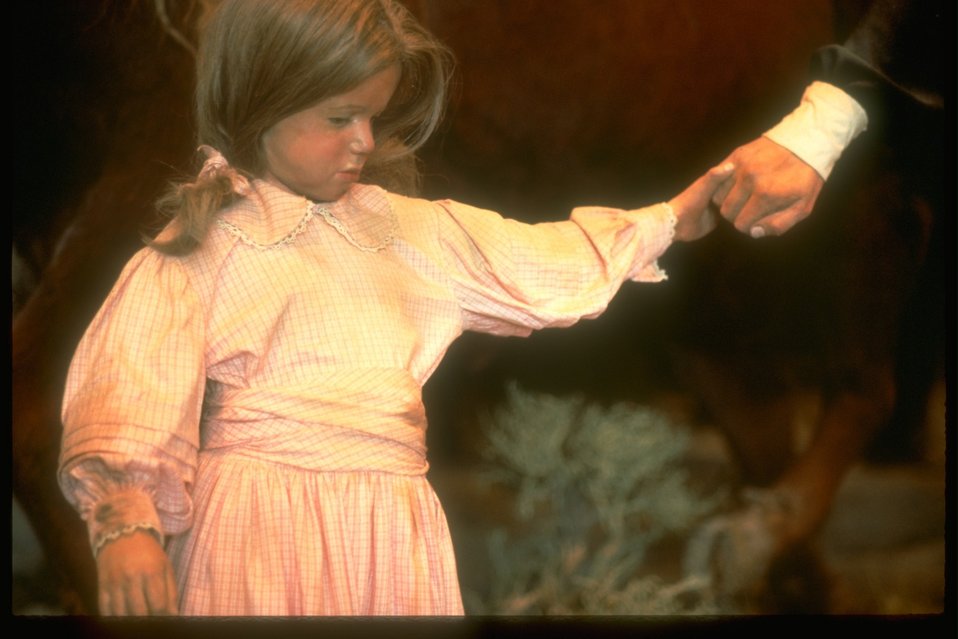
Life size young girl with mother at the NHOTIC gallery.